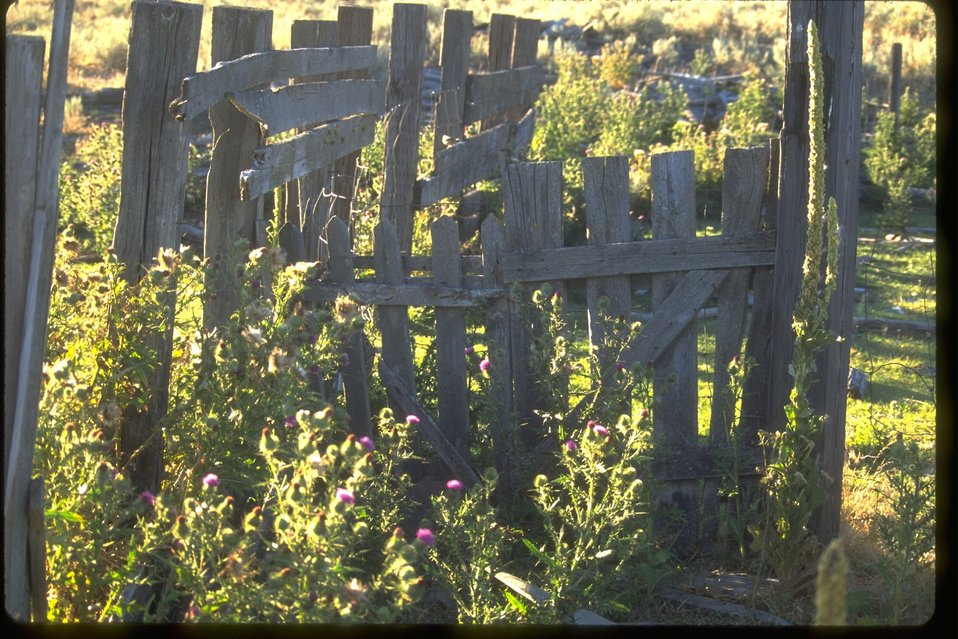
Historic gate and fence at Rock Ranch in Twin Lakes Management Area, Lincoln County, Washington.